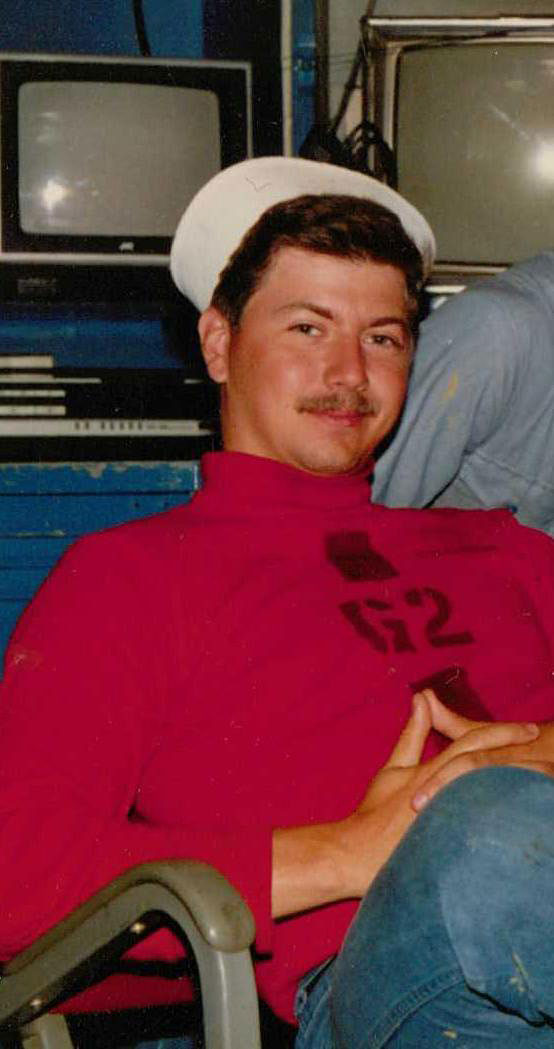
Jack Skogen, an R3 Procurement Technician in the Engineering Department, served in the Navy. This photo was taken of Skogen while serving aboard the USS Enterprise in 1986.